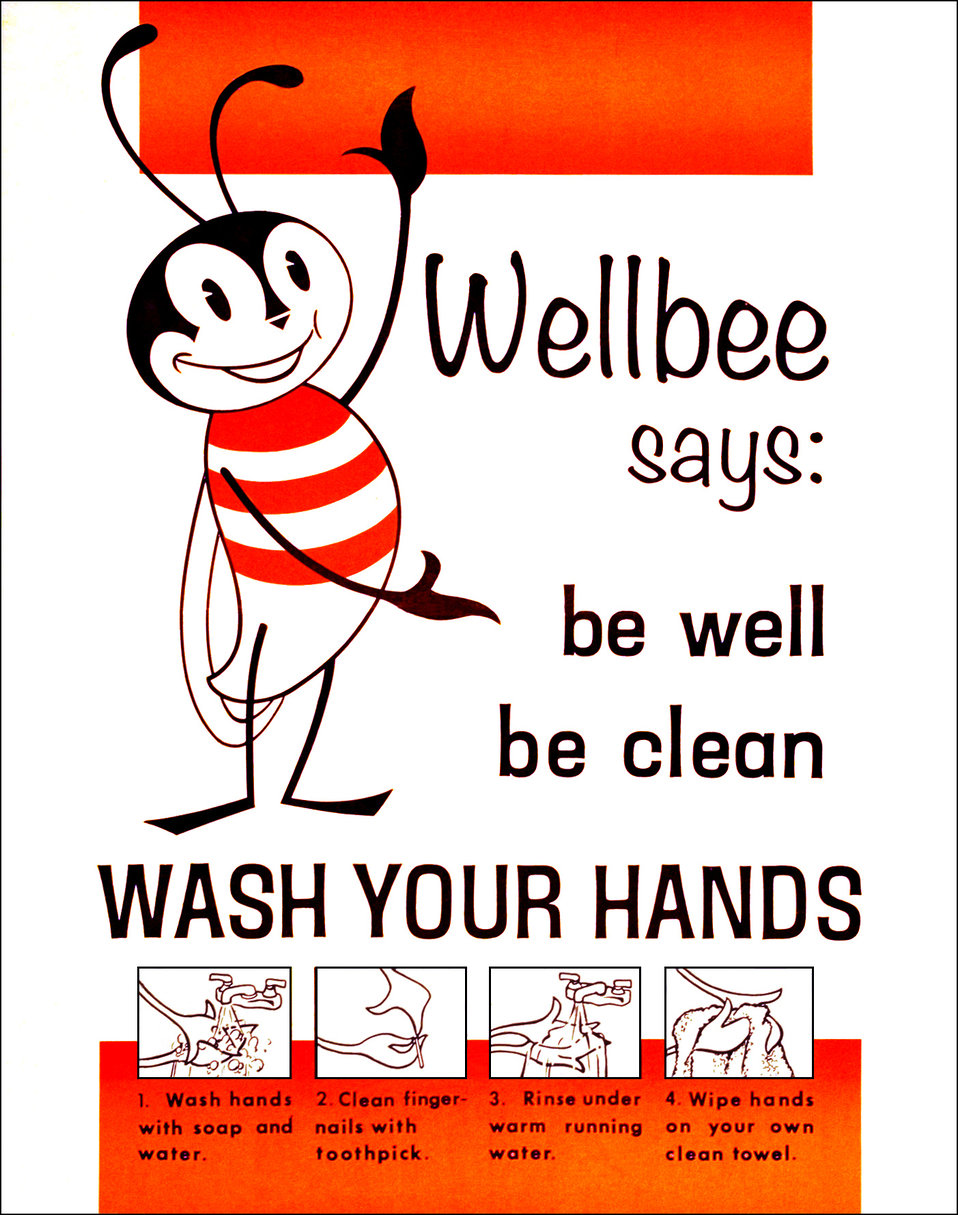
This 1964 poster featured CDC's national symbol of public health "Wellbee" who was reminding the public to "be well, be clean and WASH YOUR HANDS".